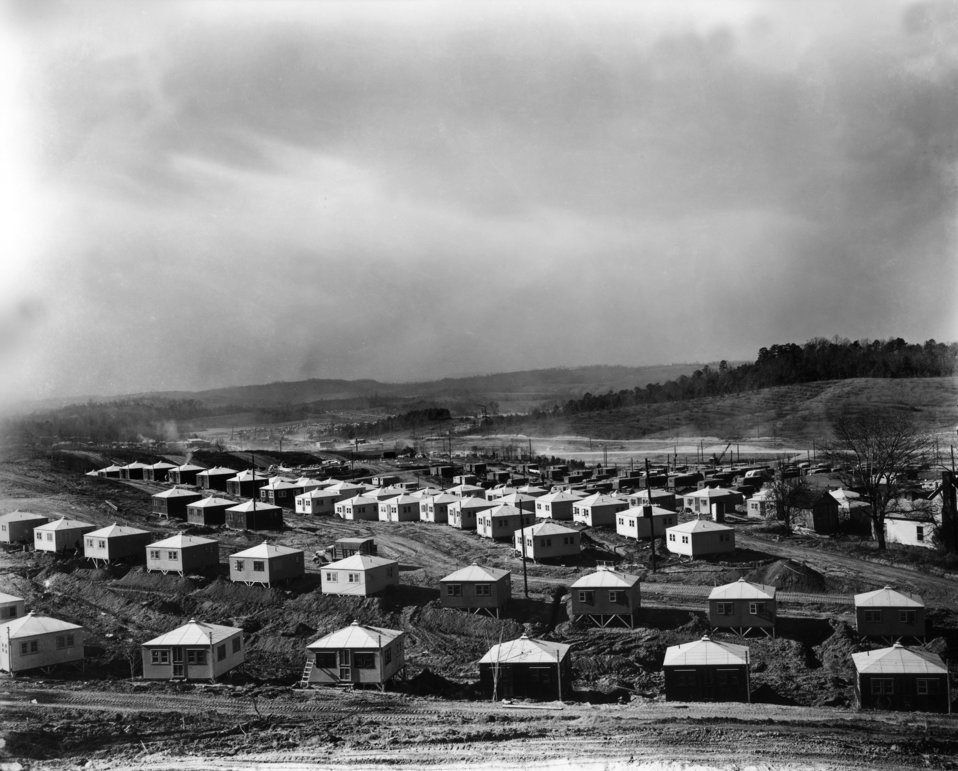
Temporary Housing (Hutments) - Oak Ridge

S-374 DOE photo by Ed Westcott Temporary Housing (Hutments) - Oak Ridge Tennessee 1945